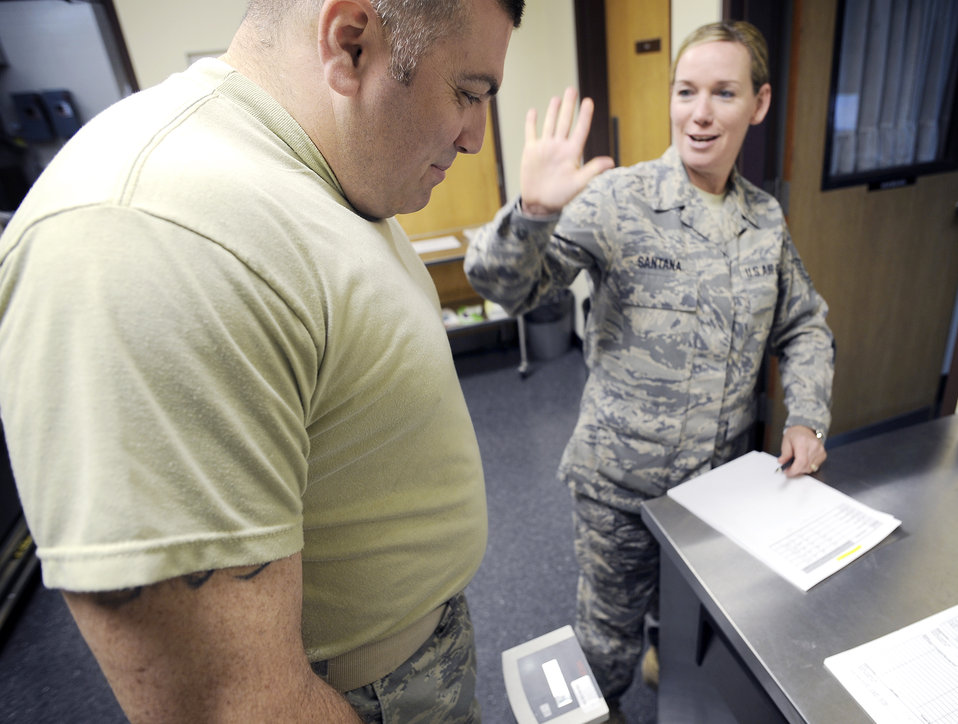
'Biggest Loser' comes to Osan

Tech. Sgt. Darlene Santana waits for a high-five as Senior Master Sgt Robert Elkins looks down at the scale during the 51st Medical Group